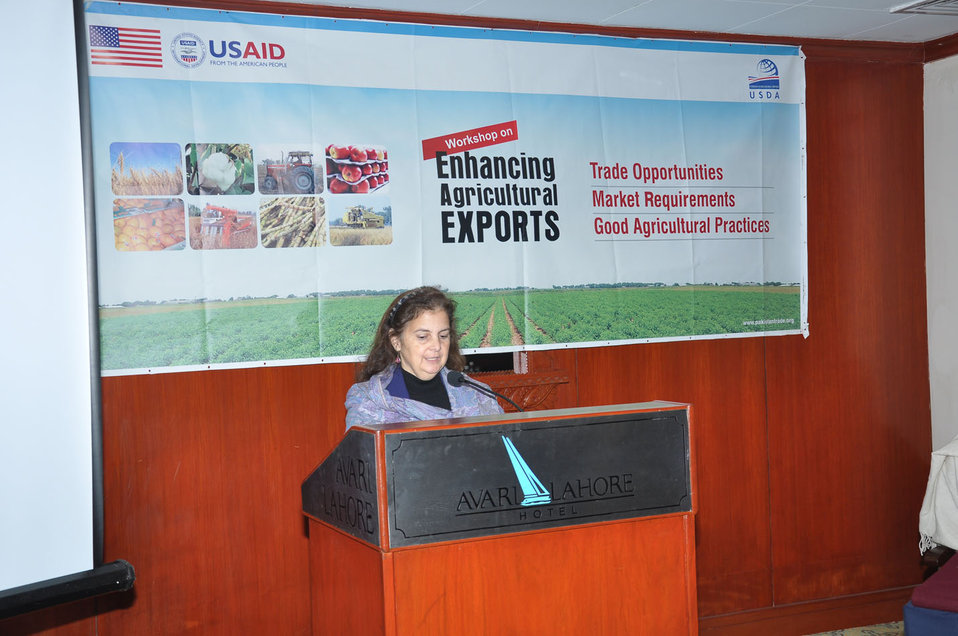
Ms. Nina Fite, U.S. Consul General is addressing the participants at AG workshop organized by USAID Trade Project